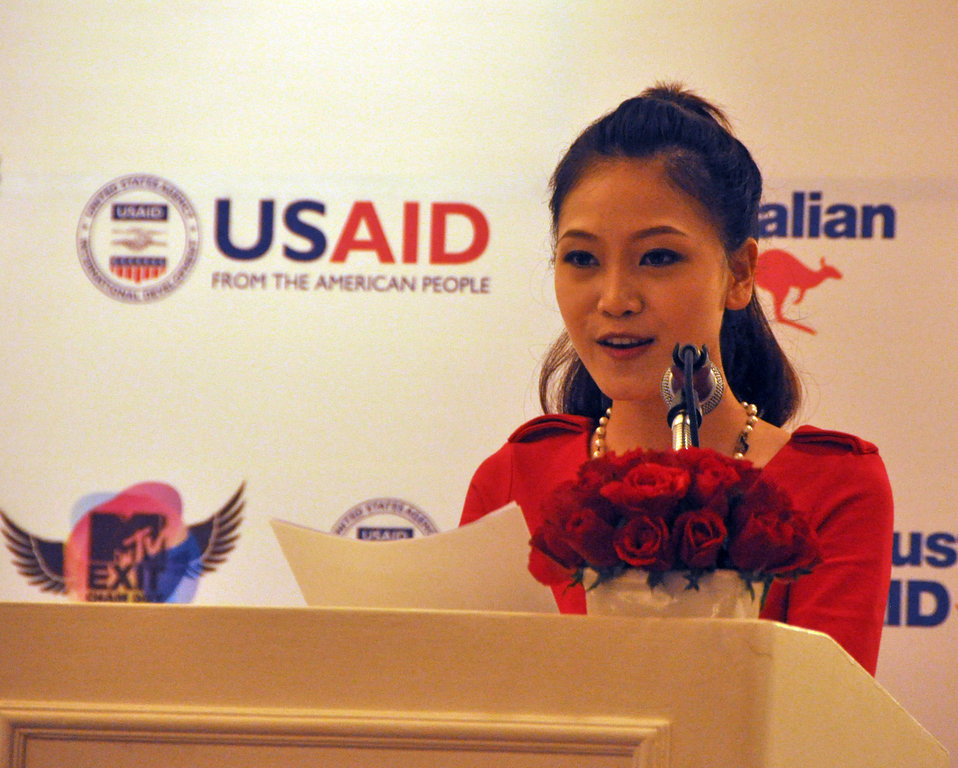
Xuan Thuy, MC of the MTV EXIT press launch

USAID joins MTVExit to launch documentary and awareness campaign against human trafficking